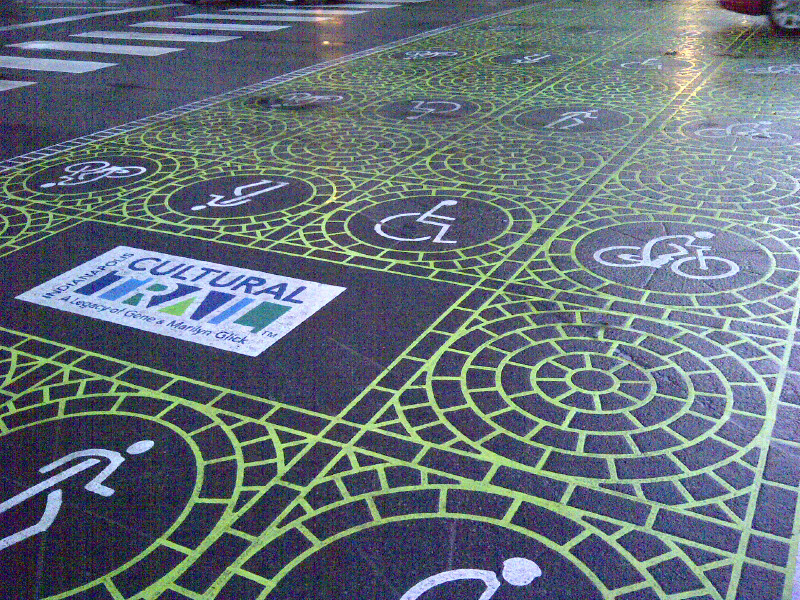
Cultural Trail, Indianapolis

The Cultural Trail in #Indianapolis is an 8 mile linear park for bicyclists and pedestrians that connects 6 cultural districts. The trail features green infrastructure for #StormWater management.